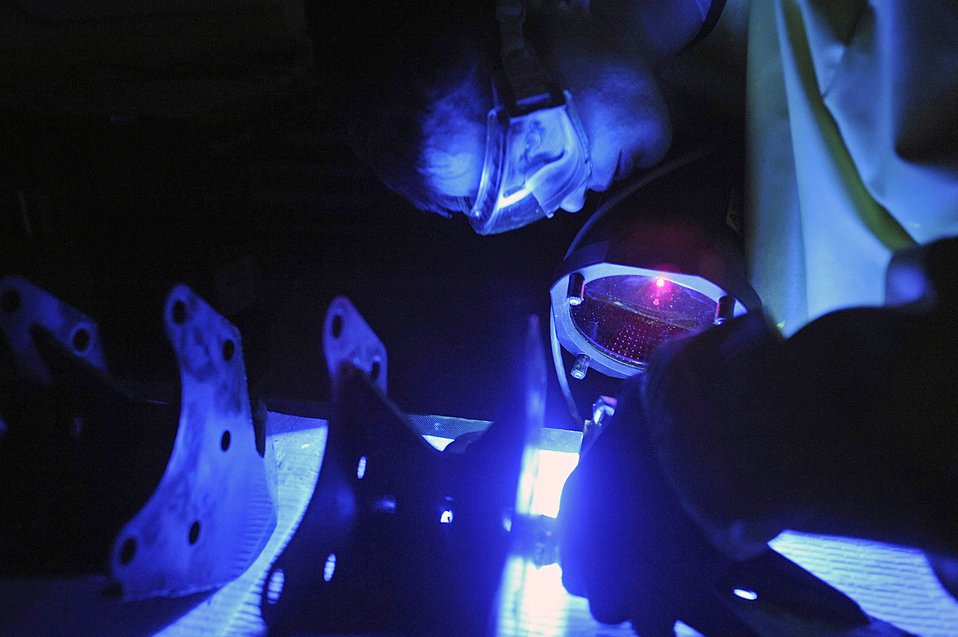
Ellsworth ultraviolet light inspection

Airman 1st Class Evan Bryant examines a forward support bracket for cracks May 20, 2010, at Ellsworth Air Force Base, S.D. Airman Bryant is a non-destructive inspection technician with the 28th Maintenance Squadron.